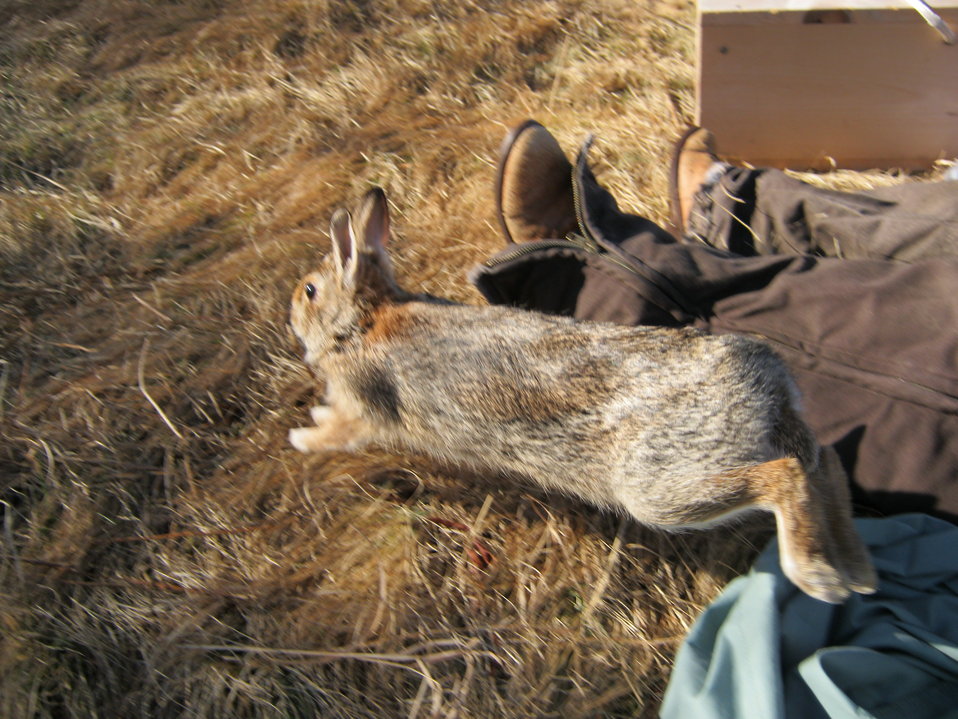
Finding New England cottontails

A cottontail returns to its home after being processed by Service staff.